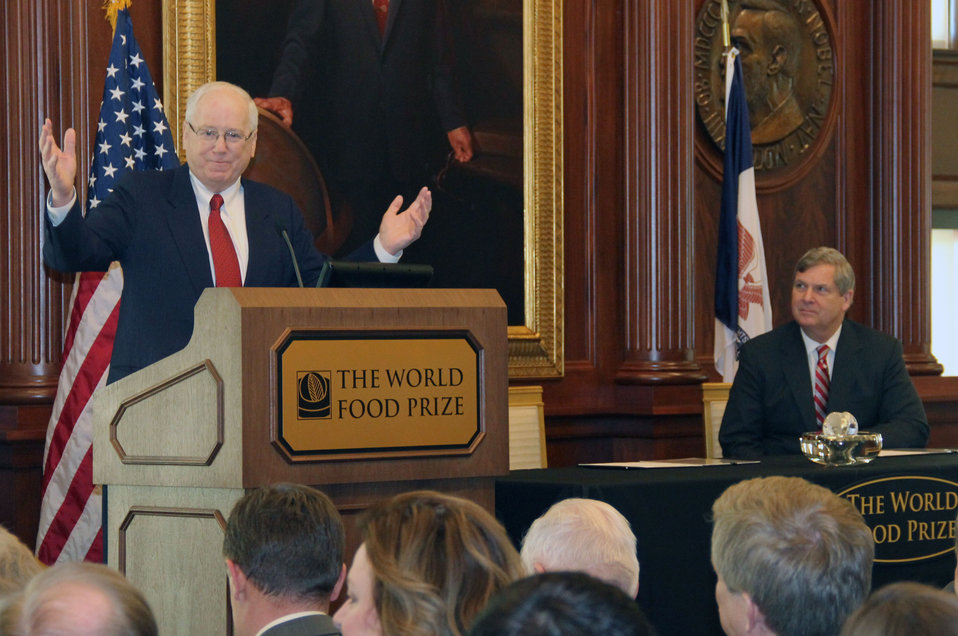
Former Ambassador to the Kingdom of Cambodia Kenneth M. Quinn of the World Food Prize Foundation makes remarks as Agriculture Secretary Tom Vilsack looks on during the World Food Prize Foundation Cement Partnership to Support USDA's Wallace-Carver Internship Program, at the World Food Prize Hall of Laureates in Des Moines, Iowa, on Feb. 19, 2013, before a crowd of 200 youth and business leaders to formalize a partnership enhancing the Wallace-Carver Internship Program for students involved in cutting-edge agriculture, science and research.